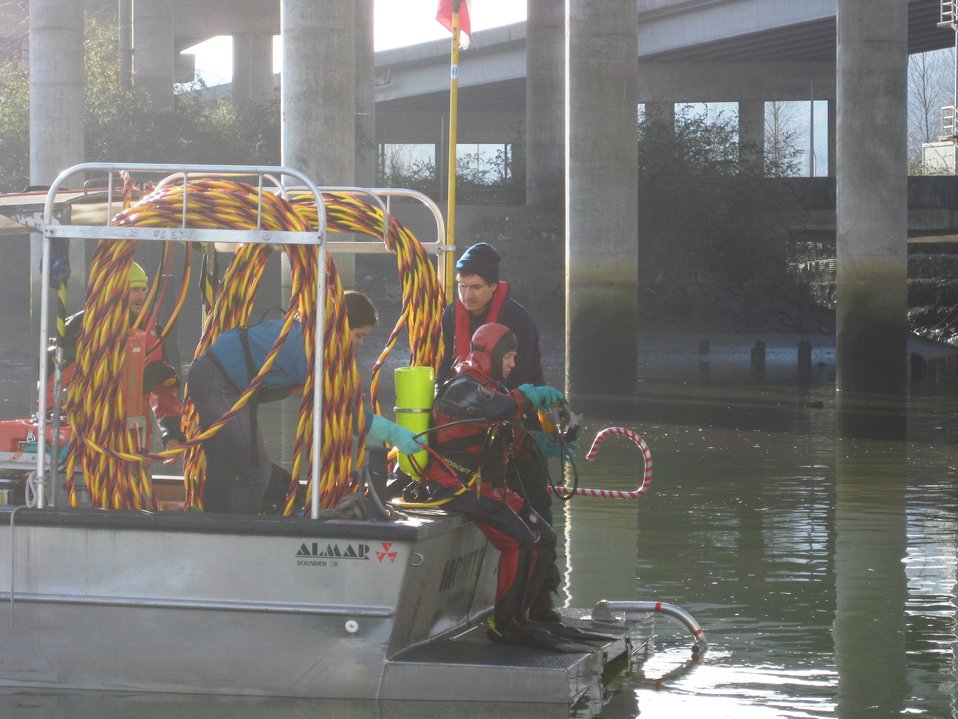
January 15, 2013 - Lower Duwamish sampler recovery trip

In this photo, EPA diver Lisa Macchio prepares to retrieve samples. This operation took place with divers using surface supplied air, the yellow tank provides a backup emergency supply.

Diving in contaminated water requires full encapsulation of the diver. Here you can see how the suit fits around her face, as she prepares to put on her dive mask. Dive tenders Brent Richmond and Anne Christopher conduct safety checks.

Lower Duwamish Waterway Superfund Site

More about this sampling event

To find out more about EPA diving nationally, visit: www.facebook.com/EPAdivers